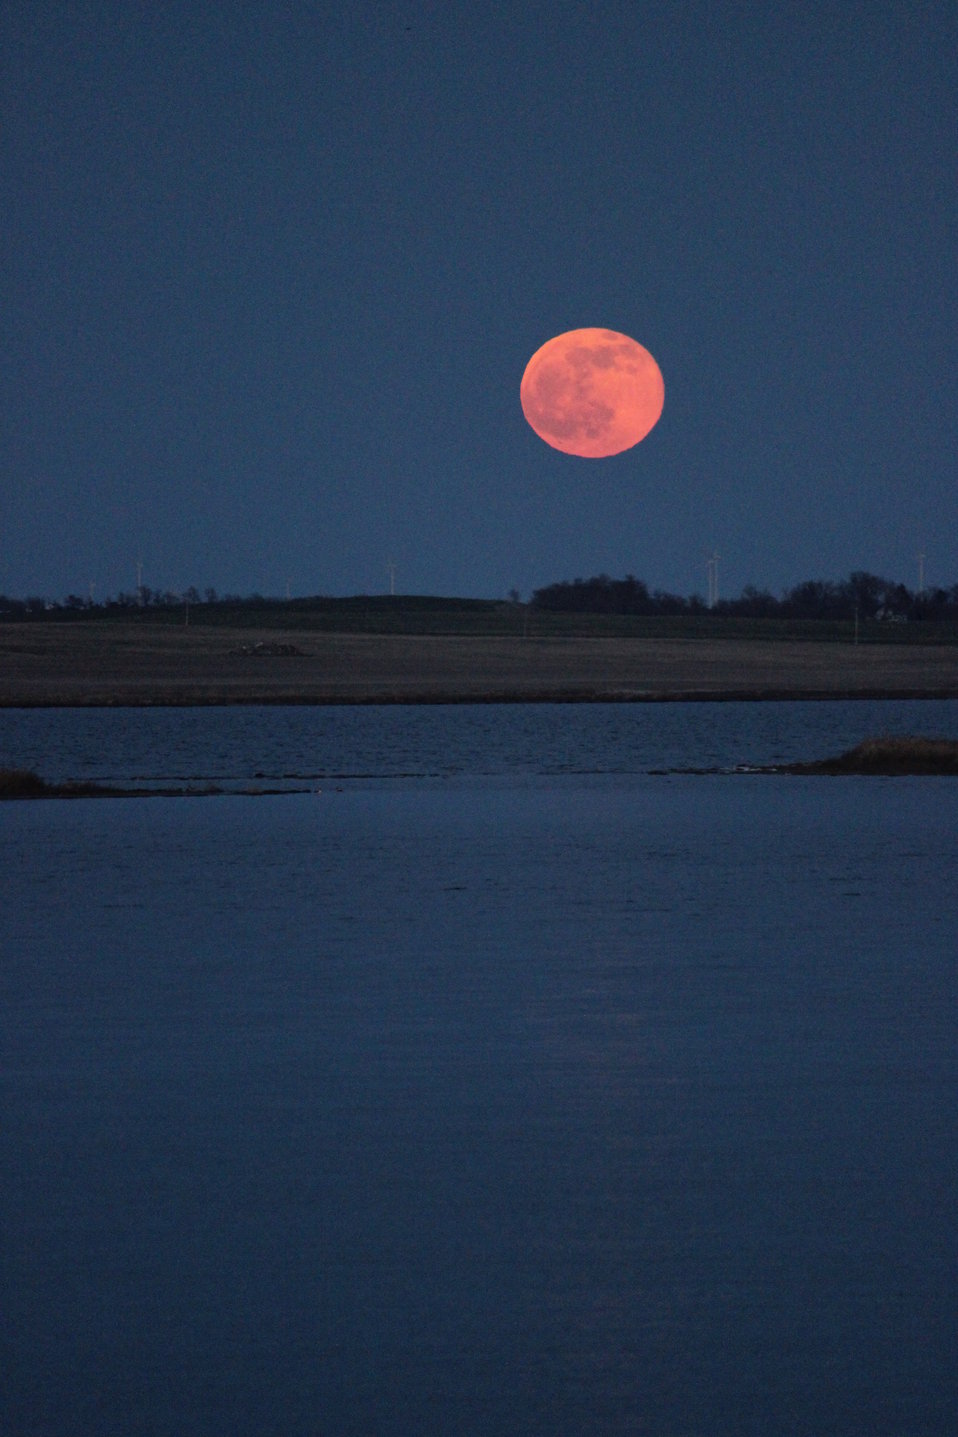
Red Moon Rising

The full, red moon continues to rise.